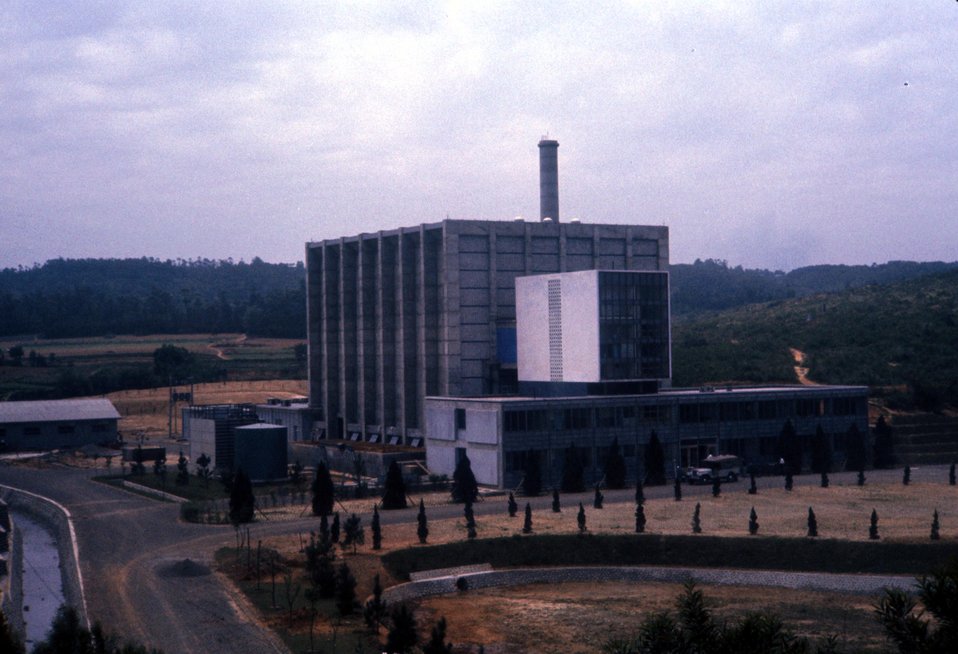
North view THU Reactor body. Chinese 1000kw Atoms for Peace Research Reactor. c. 1961